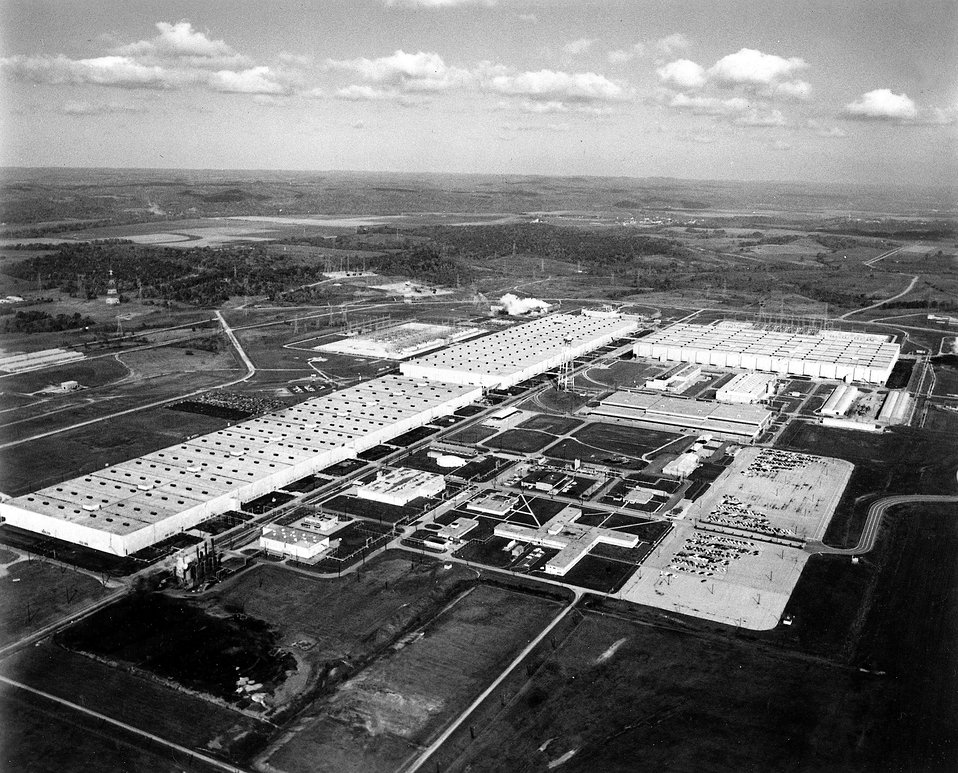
The Portsmouth Gaseous Diffusion Plant, for the separation of U-235, is located in Pike County, Ohio, about 20 miles north of Portsmouth. The Energy Research and Development Administration's operating contractor at the plant is Goodyear Atomics Corporation, a subsidy of the Goodyear Tire and Rubber Company. Circa 1971.